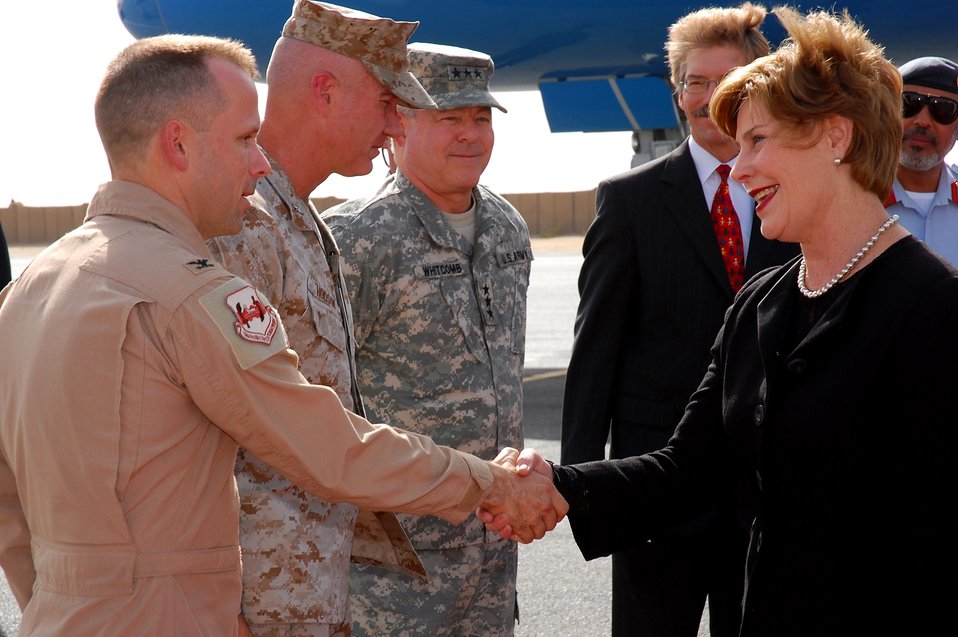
First lady visits Middle East

First Lady Laura Bush meets Col. Brian O'Connor Oct. 19 at an undisclosed location in Southwest Asia. The first lady's visit highlights the accomplishments of the Middle East Partnership Initiative programs of the State Department, and also to visit a number of programs in countries that have launched the U.S. and Middle East partnership for breast cancer awareness and research. Colonel O'Connor is the 386th Air Expeditionary Wing vice commander.